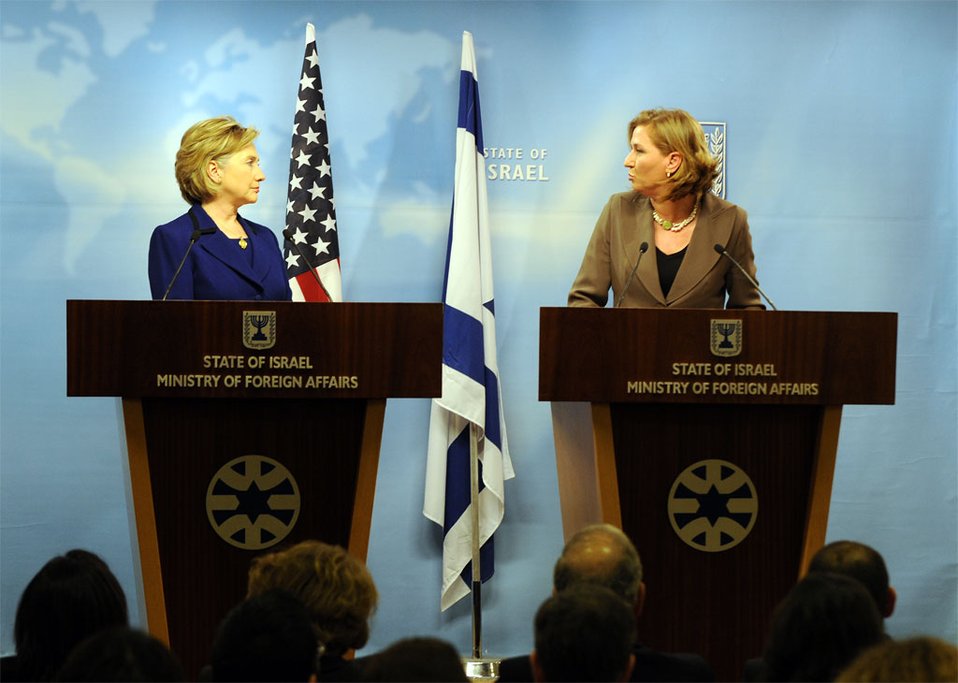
Secretary Clinton With Israeli Foreign Minister

U.S. Secretary of State Hillary Rodham Clinton at the Foreign Ministry Press Conference following meeting with Foreign Minister Tzippi Livni in Jerusalem March 3, 2009